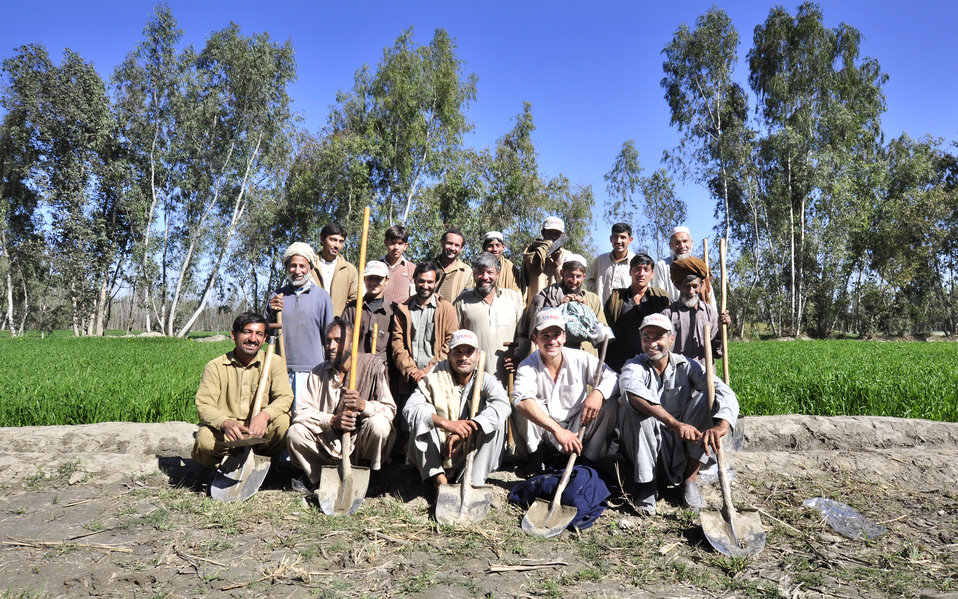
2011 March: USAID's Agricultural Recovery Program in 22 districts of Khyber Pakhtunkhwa, Punjab and Balochistan is an excellent example of the impact US development assistance can have. We have helped more than 500,000 farmers salvage the winter planting season and livestock after the floods. As a result, wheat farmers have nearly doubled their harvests. More than 5 million people have benefited. These photos show progress of the USAID Agricultural Recovery Project in Khyber Pakhtunkhwa.